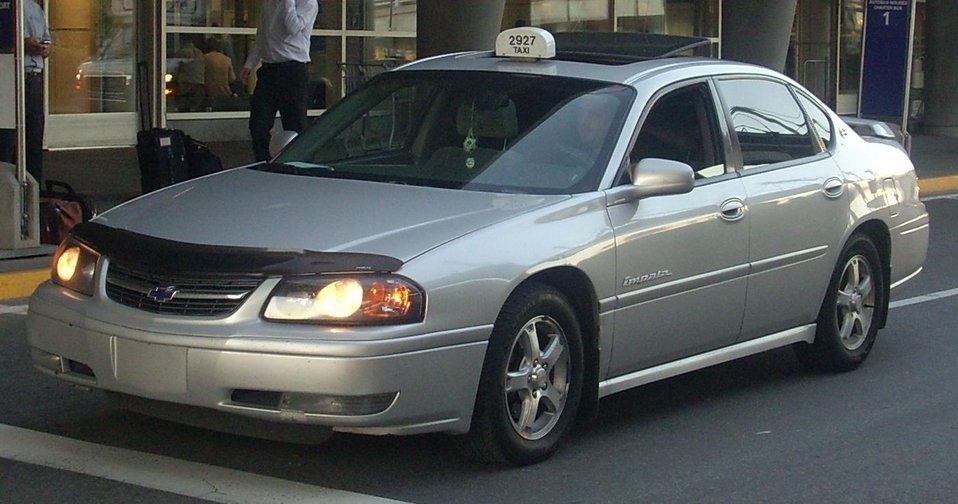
2000-2002 Chevrolet Impala photographed in Montreal, Quebec, Canada.